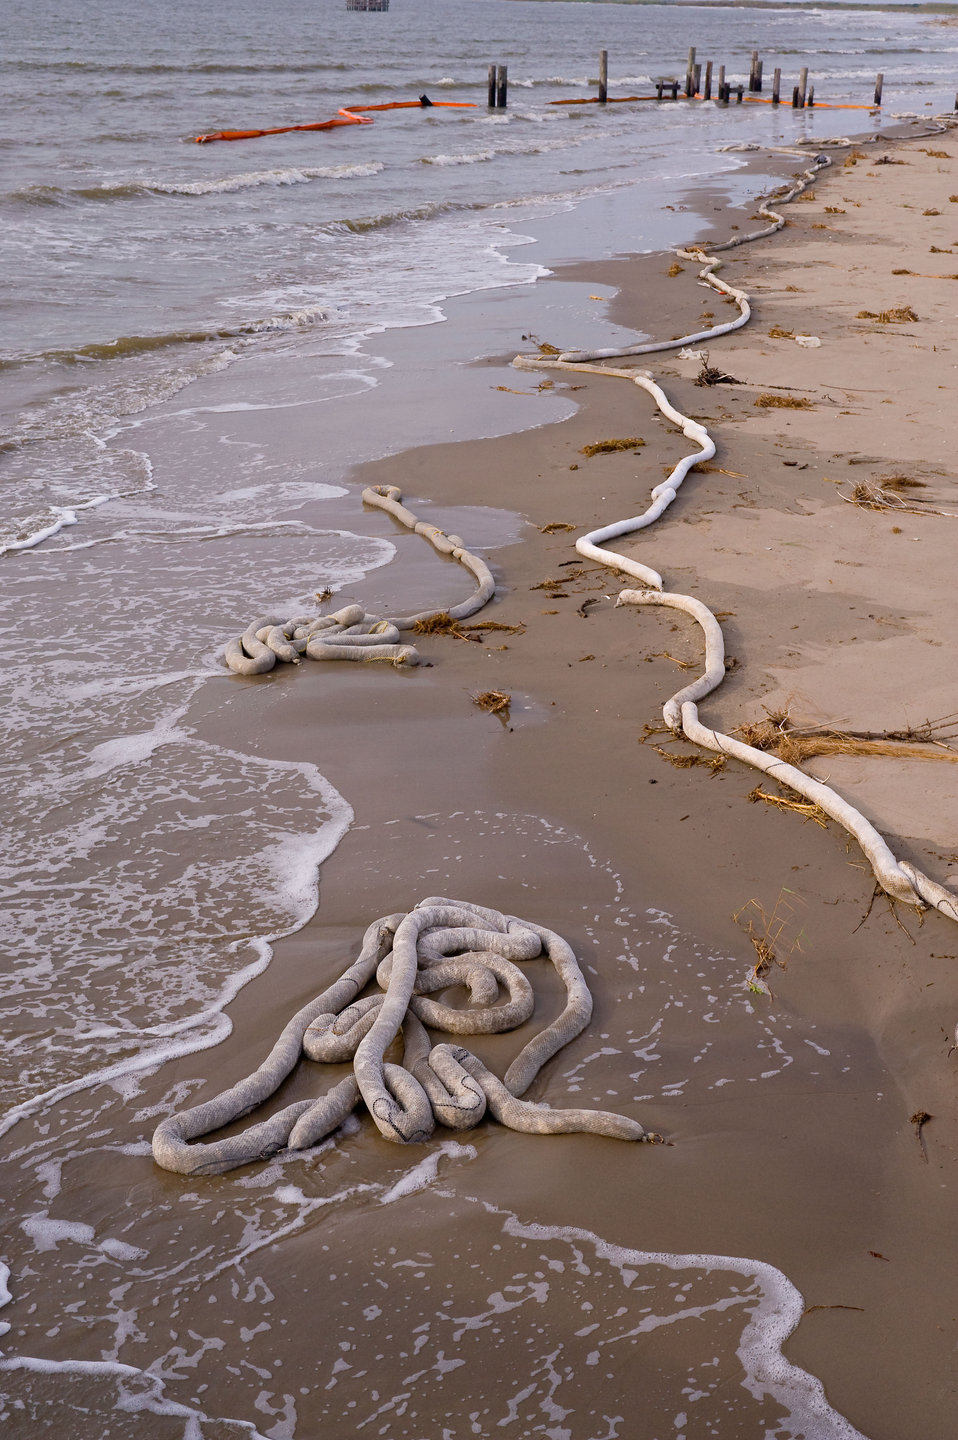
May 14, Sorbent boom in the waves, Grand Isle, La

Grand Isle, La US EPA photo by Eric Vance